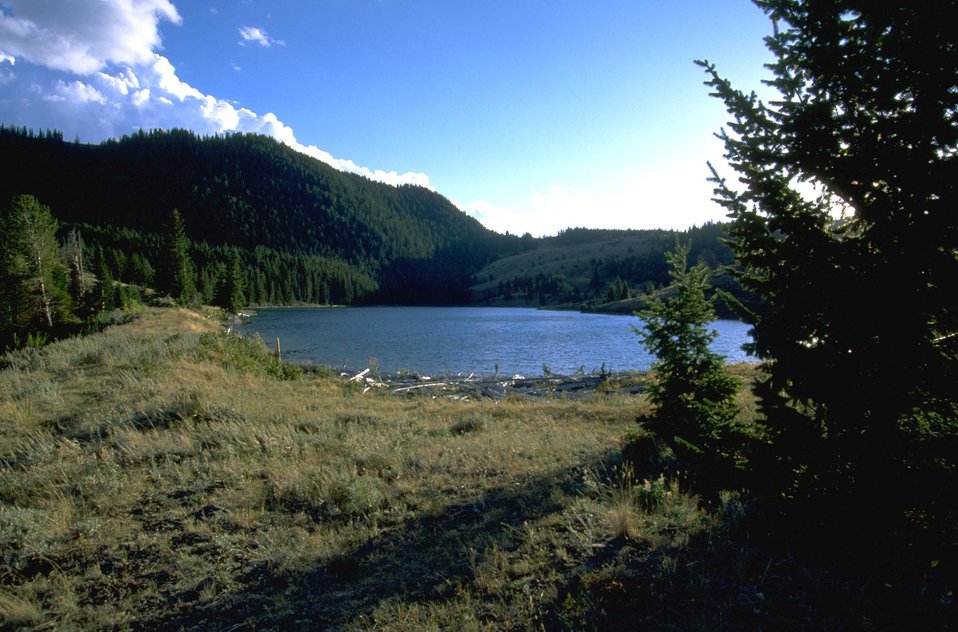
Lake in the wilderness